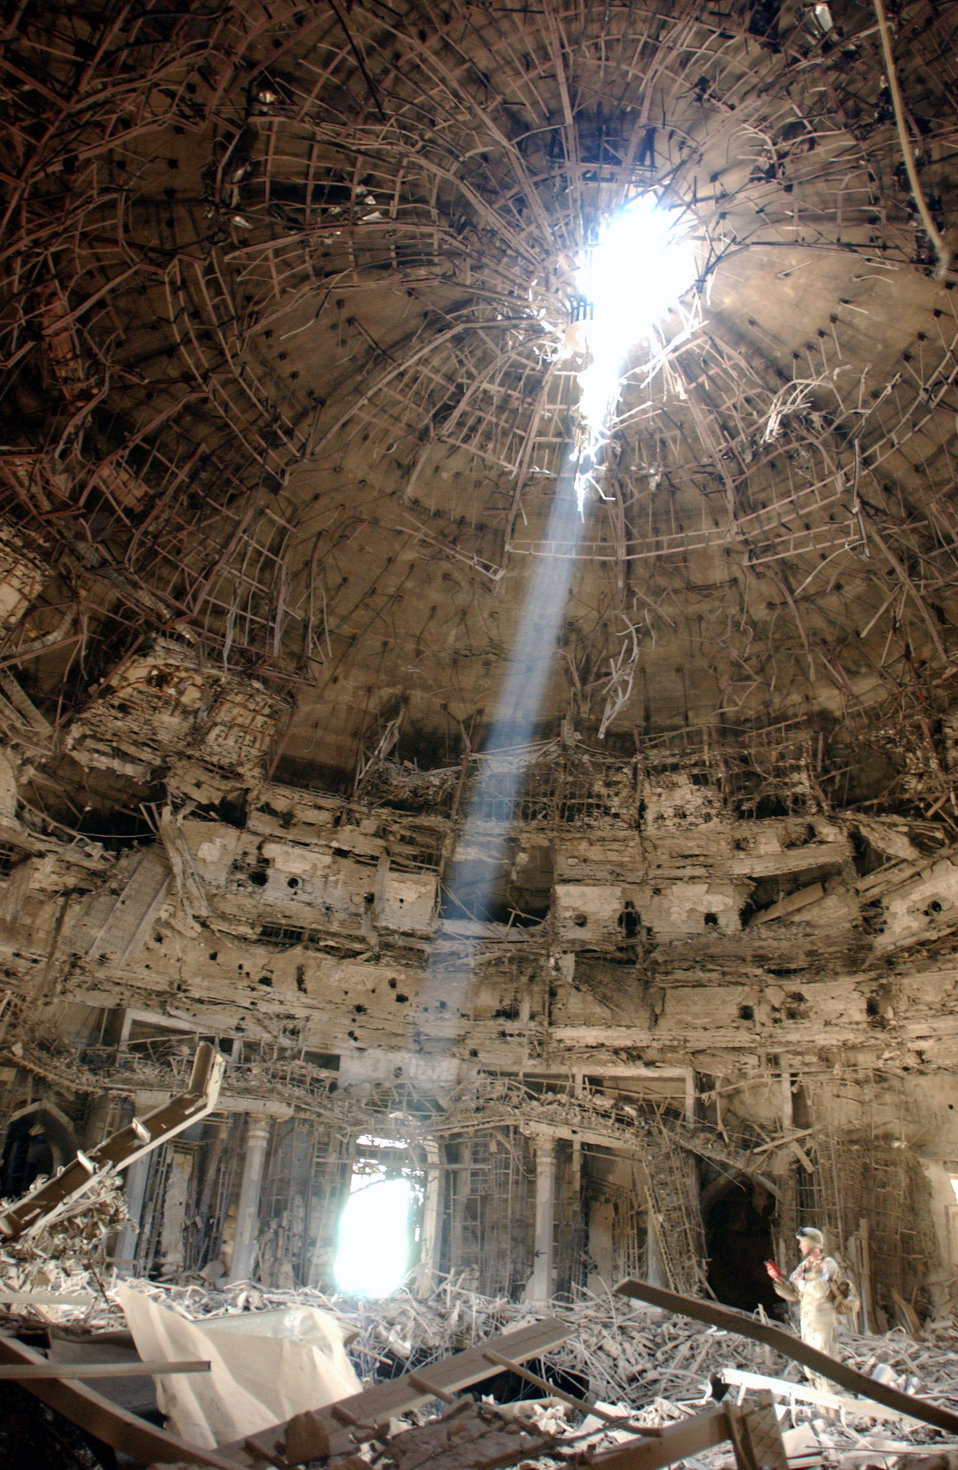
Impact point

BAGHDAD, Iraq (AFPN) -- A member (bottom right) of the Combined Weapons Effectiveness Assessment Team assesses the impact point of a precision-guided 5,000-pound bomb through the dome of one of Saddam Hussein's key regime buildings here. The impact point is one of up to 500 the team will assess in coming weeks.